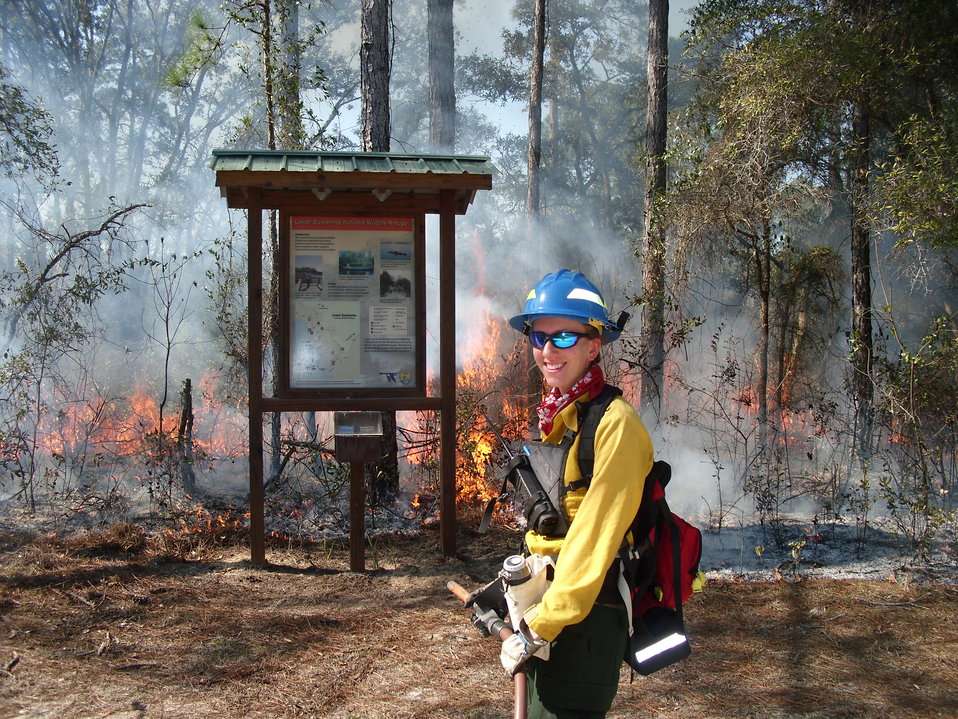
UFSAFE1

University of Florida student Cheyanne Quigley of the Student Association for Fire Ecology (SAFE) at a prescribed burn on Lower Suwannee NWR